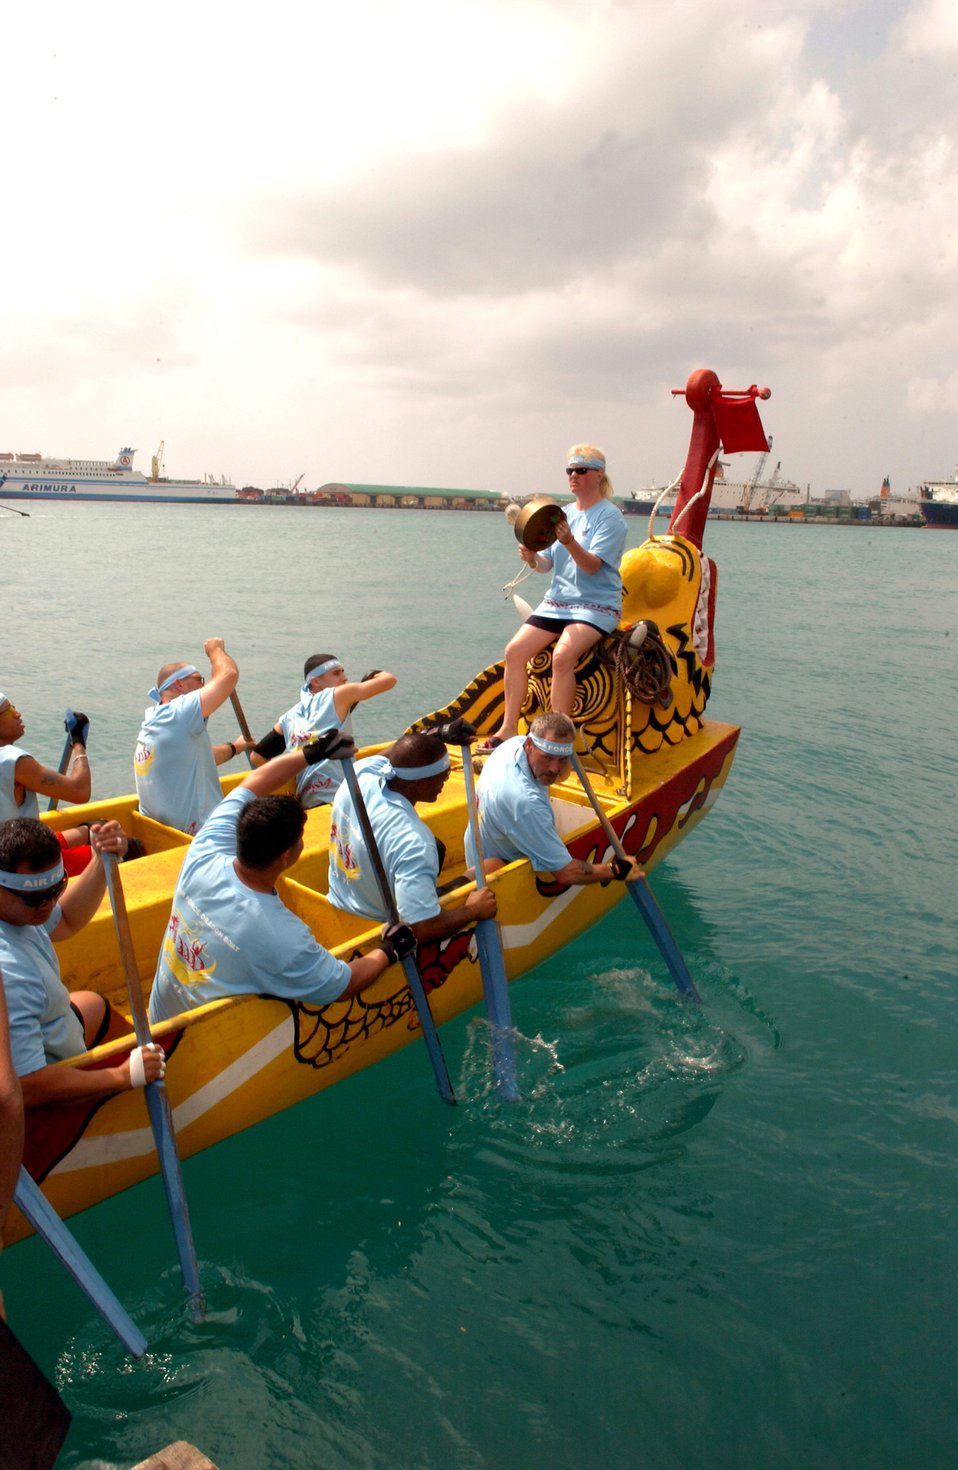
Dragon races

Airmen comprising the